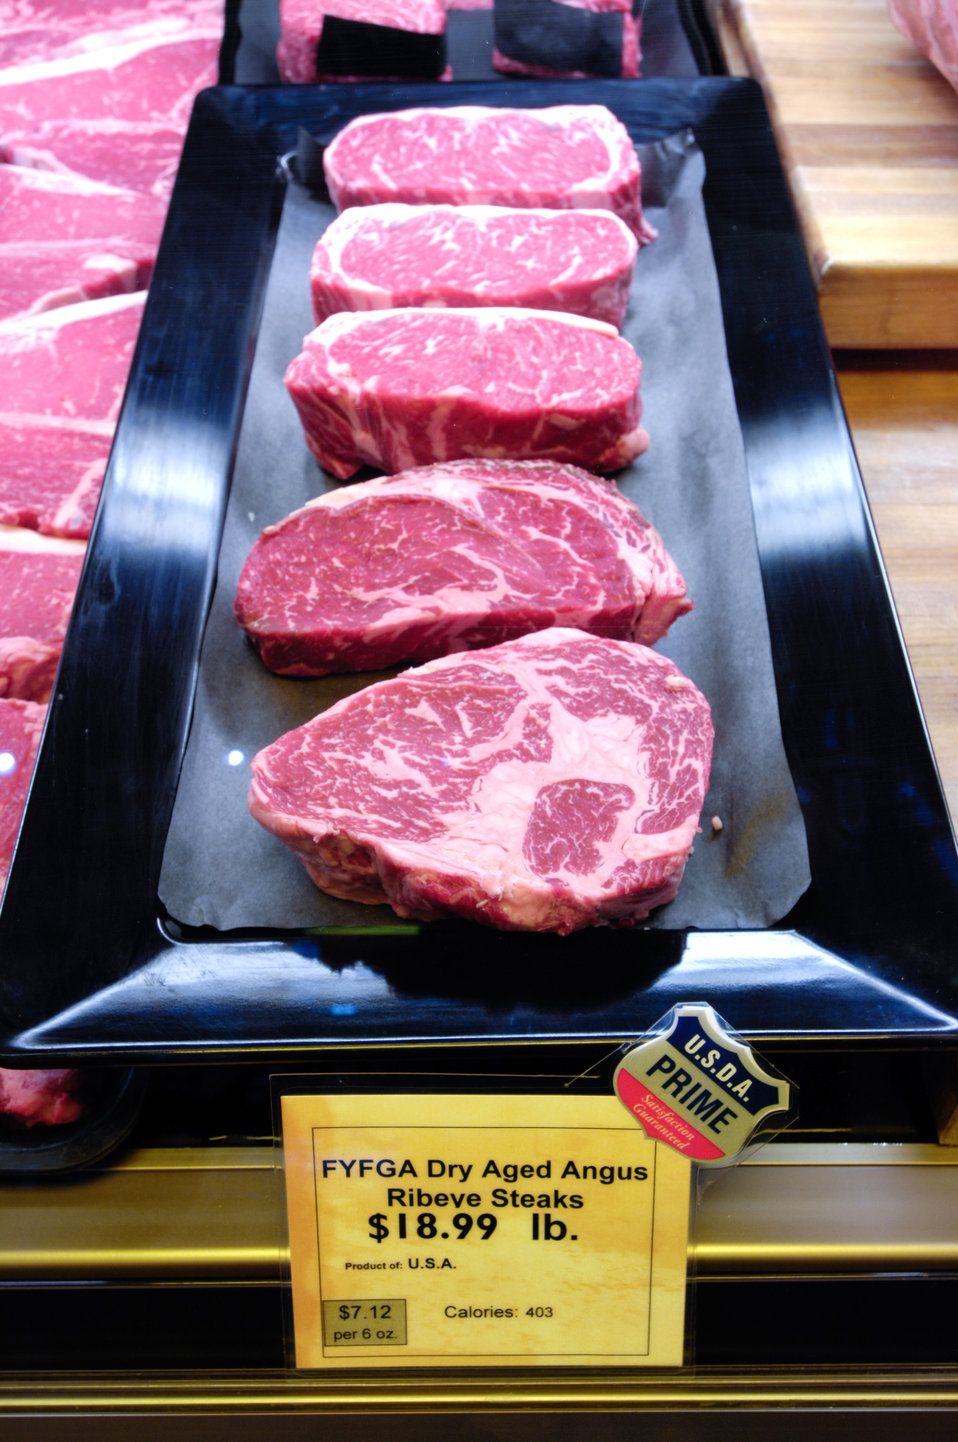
Beef sold at Wegman’s Supermarket in Fredericksburg, Virginia on September 1, 2009 displays the required Country of Origin Label (COOL). COOL is a labeling law that requires retailer, such as full-line grocery stores, supermarkets, and club warehouse stores to notify their customers with information regarding the source of certain foods. Food products and covered commodities contained in the law include muscle cut and ground meats of beef, veal, pork, lamb, goat, and chicken; wild and farm-raised fish and shellfish; fresh and frozen fruits and vegetables; peanuts, pecans, and macadamia nuts; and ginseng. The U.S. Department of Agriculture (USDA) Agricultural Marketing Service (AMS) is responsible for the administration and enforcement of COOL.